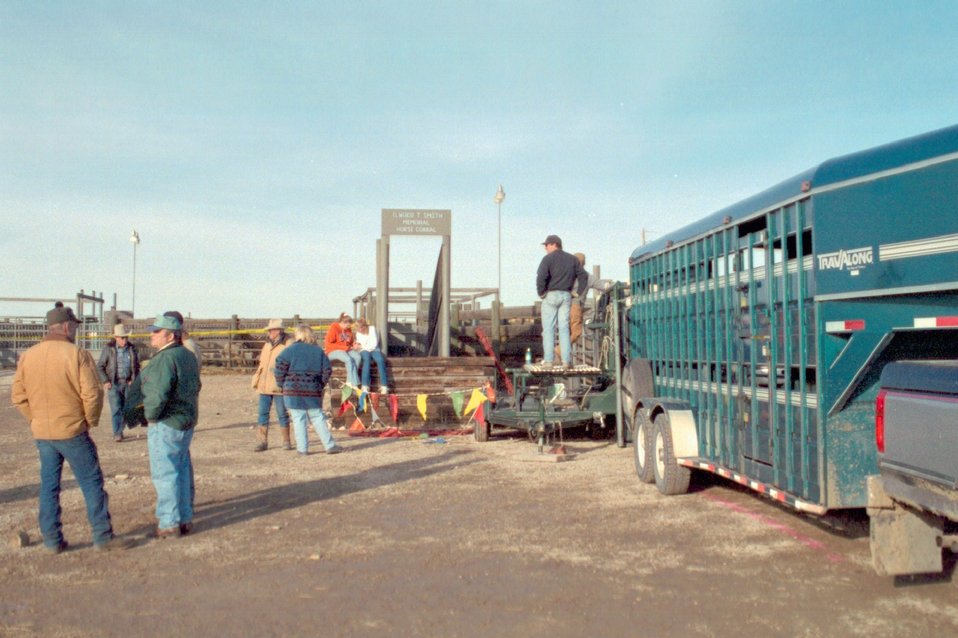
Wild Horse and Burro Adoption